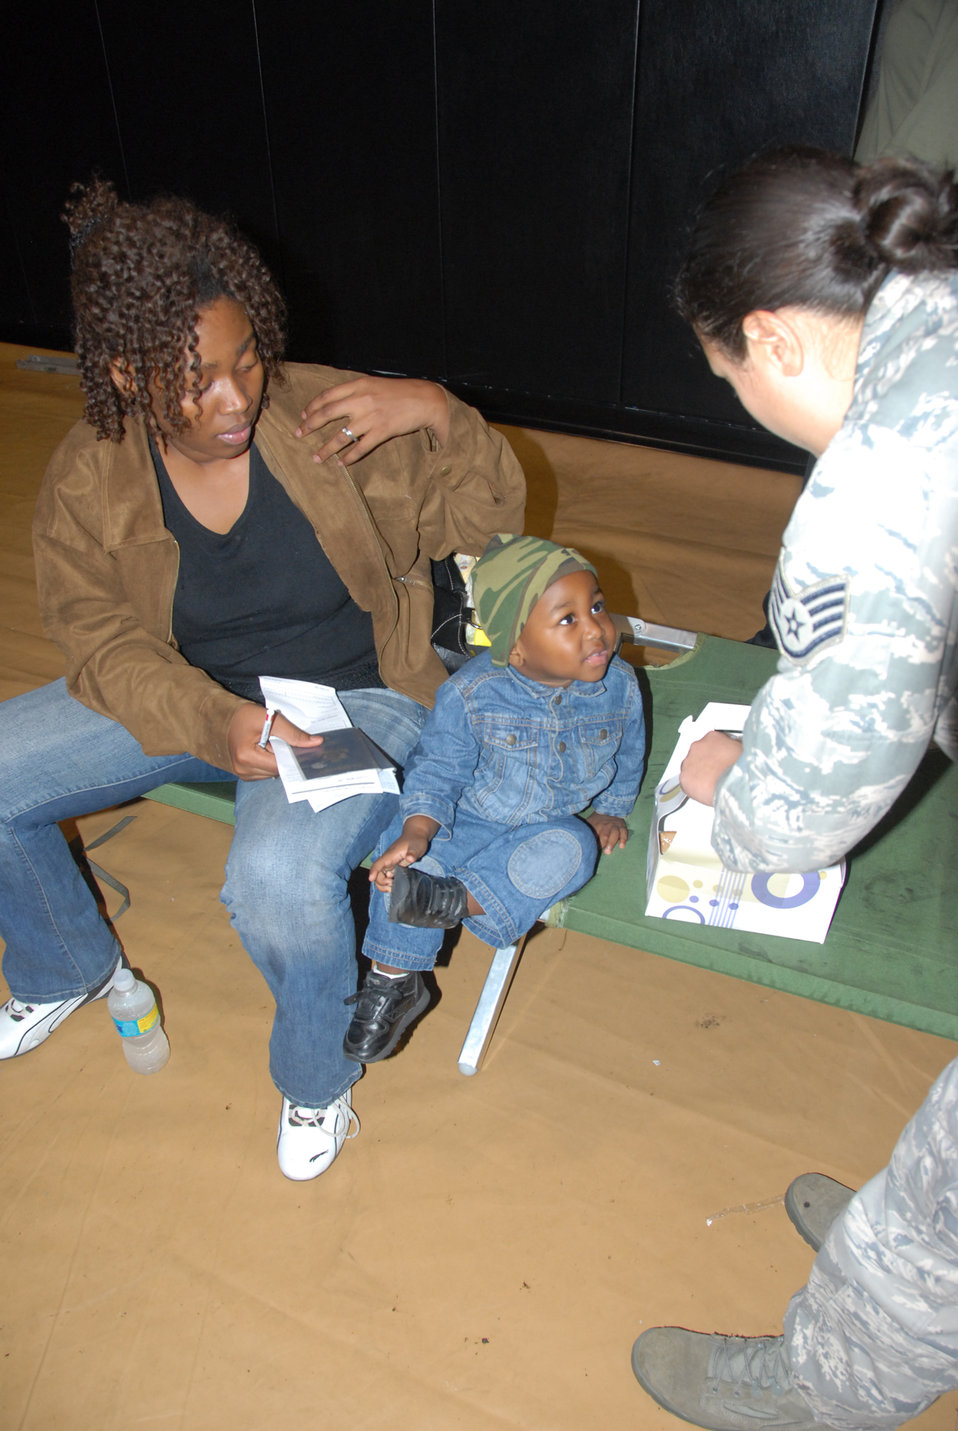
Haiti relief

An Air Force reservist from the 482nd Fighter Wing at Homestead Air Reserve Base, Fla., gives some food and a smile to a young boy who arrived from Haiti Jan. 20. 2010. The boy and his family are being in-processed on base. Hundreds of evacuees have been in-processed so far and thousands more are expected.